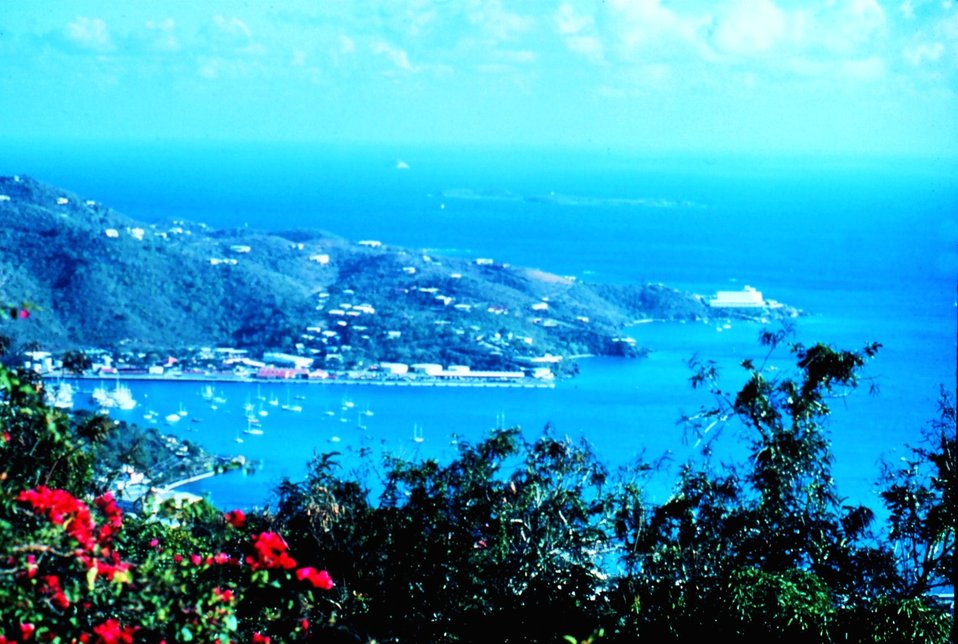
Looking southeast over the Charlotte Amalie Harbor